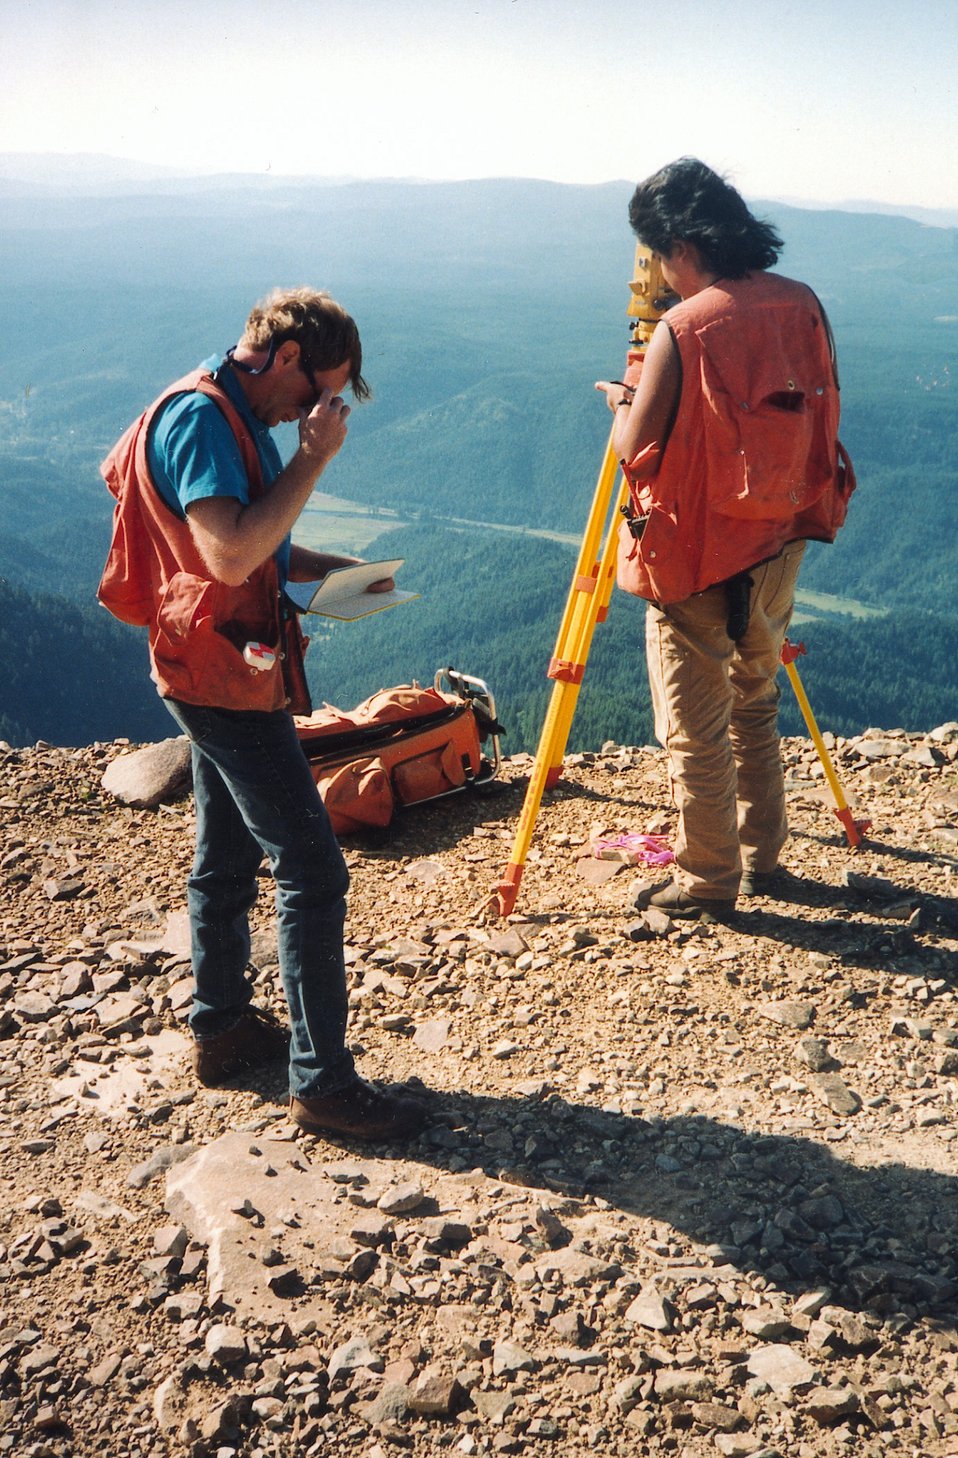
Cadastral Surveys Idaho Bureau of Land Management